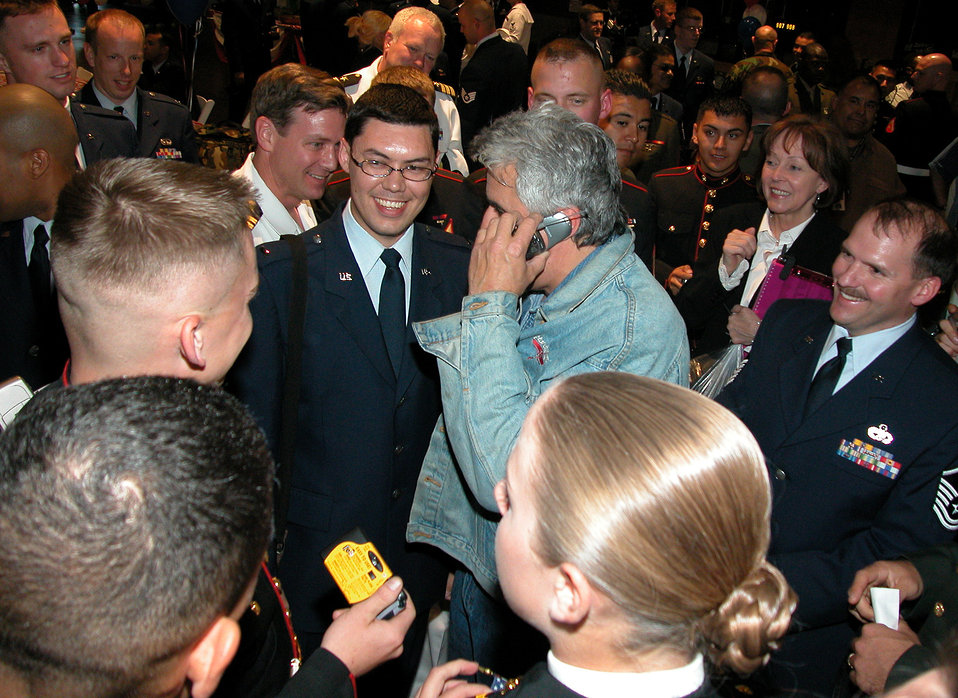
Hanging with Jay Leno

BURBANK, Calif. (AFPN) -- Comedian Jay Leno chats via cell phone with the father of 1st Lt. James Chambers during a barbecue reception April 24 following a taping of